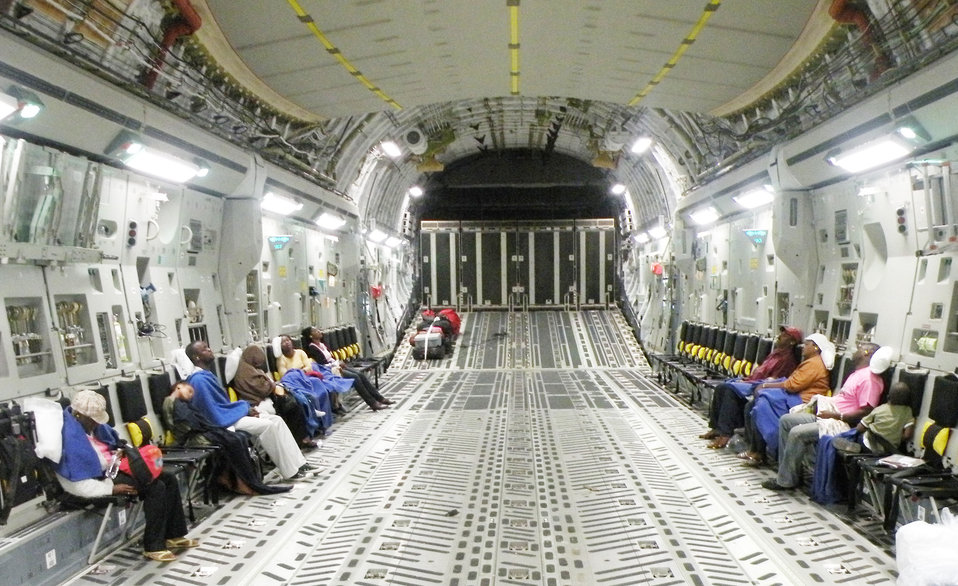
Total force crews support Operation Unified Response in Haiti

Sixteen Haitian passengers are asleep minutes after takeoff on a C-17 Globemaster III from Haiti enroute to Orlando, Fla., during the early morning hours of Jan. 22, 2010. The Travis Air Force Base, Calif.-based aircraft was flown by reservists from the 317th Airlift Squadron from Charleston AFB, S.C.